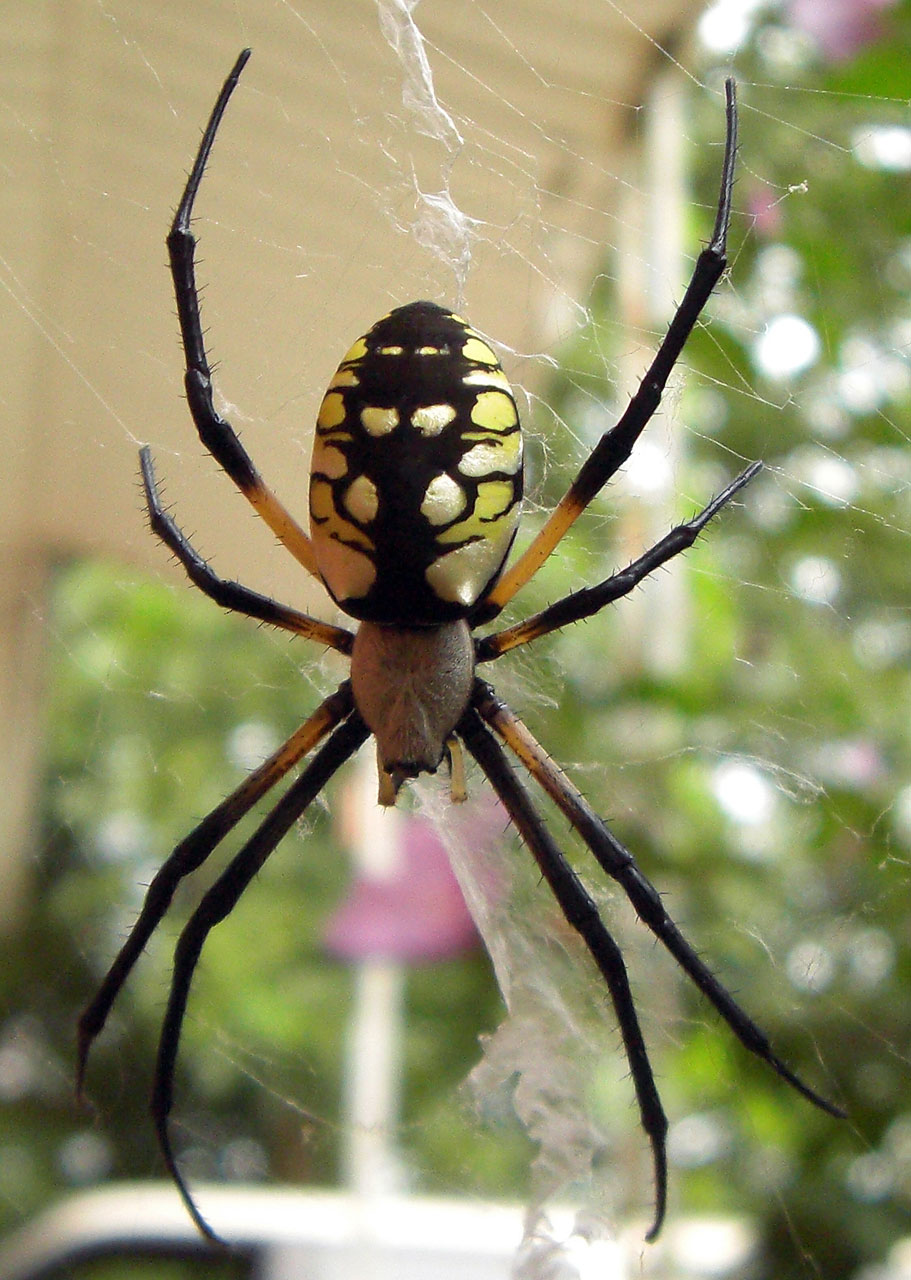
Garden spider

Just a garden spider.